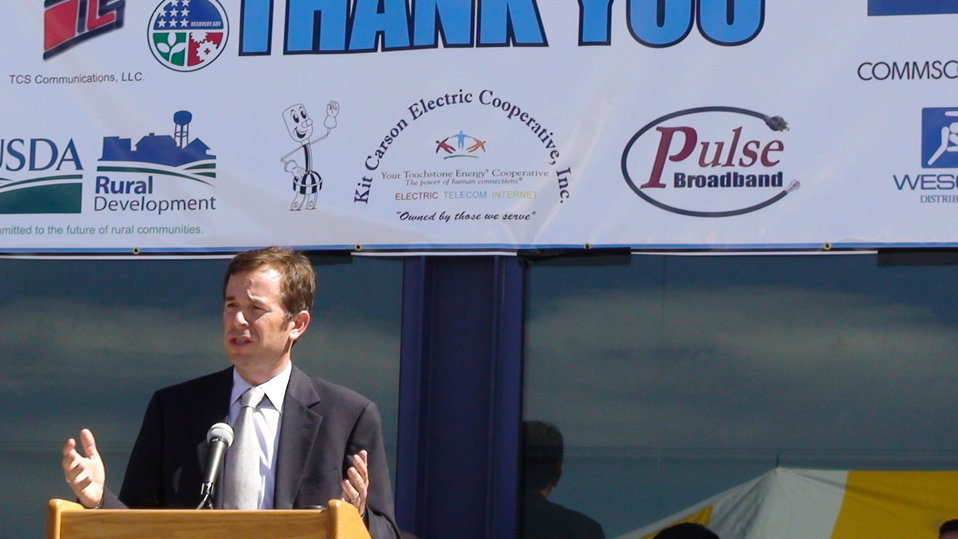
Agriculture State Director for New Mexico Terry Brunner speaks at the $64 million broadband fiber-to-the-home project groundbreaking ceremony held by the Kit Carson Electric Co-op (KCEC) on Friday, Aug. 17, 2011 in Taos, NM. KCEC’s project to build an emergency command and communications center for the region is now complete and the two projects are linked since the command center will act as project headquarters for the broadband build-out. The rural broadband project will extend 100 mbps service at very affordable rates to over 20,000 rural residents of Taos, Colfax and Rio Arriba counties in NM. The American Recovery and Reinvestment Act (ARRA) provided 70 percent of the dollars and 30 percent came from the Co-op. In addition to economic development, educational, public safety and healthcare applications, the broadband project will also enable ‘smart grid’ and ‘green grid’ applications with increased opportunities for new jobs.